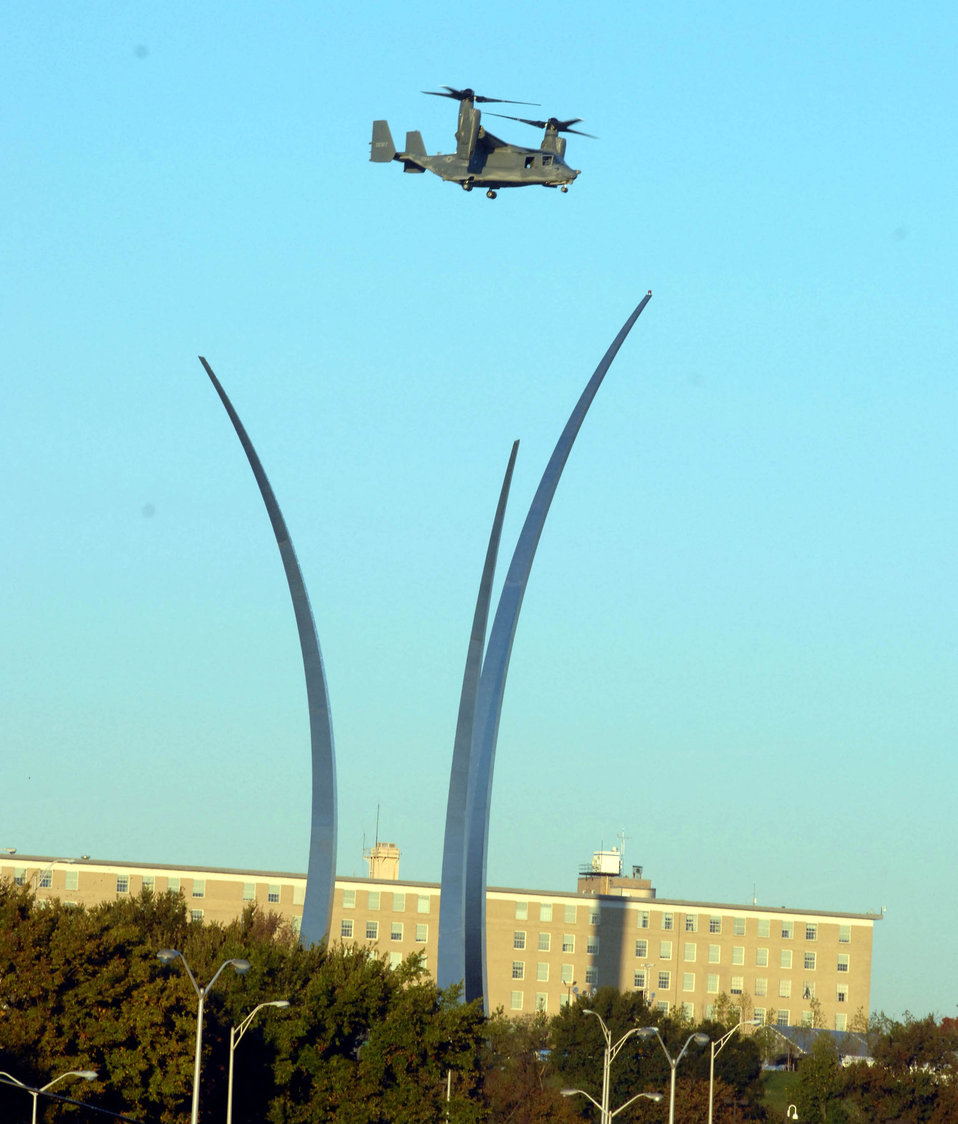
CV-22 Osprey flyover at Air Force Memorial

A CV-22 Osprey tilt rotor aircraft flies over the Air Force Memorial Oct. 13 in Arlington, Va. Aircraft including the CV-22 are landing at the Pentagon south parking lot and will be on display during the Air Force open house for the opening ceremonies of the Air Force Memorial Oct. 14.